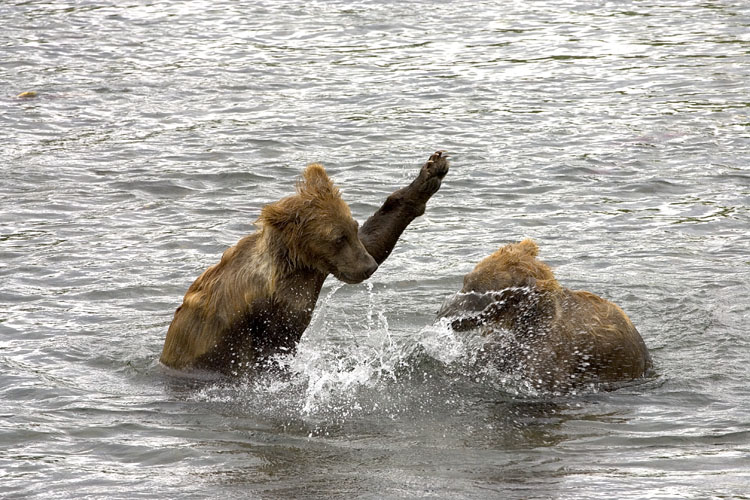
KOD Hildebrand (21)

Kodiak National Wildlife Refuge- Wildlife